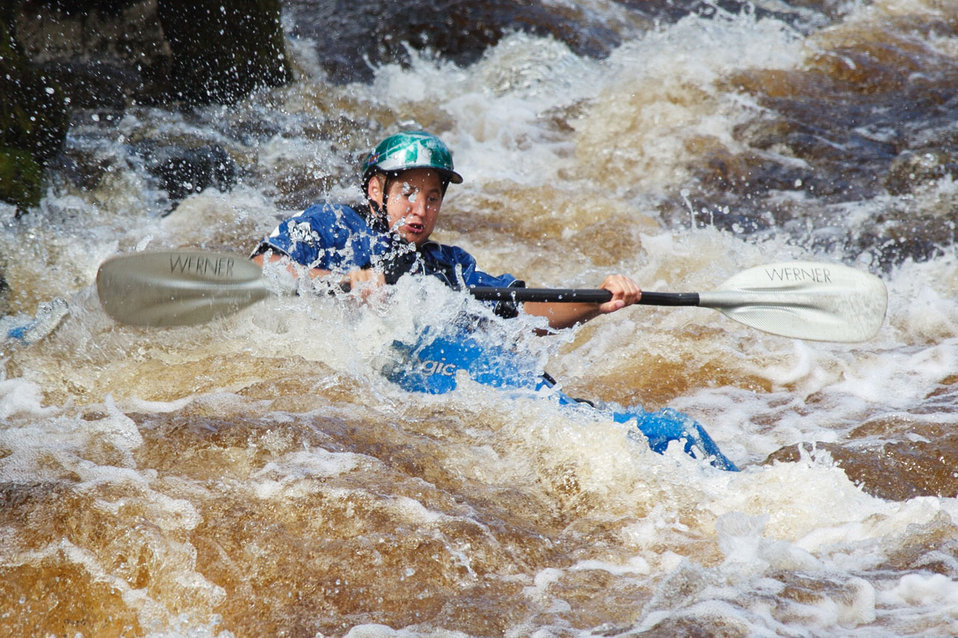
Kayaking in rapids

Man kayaking in whitewater.